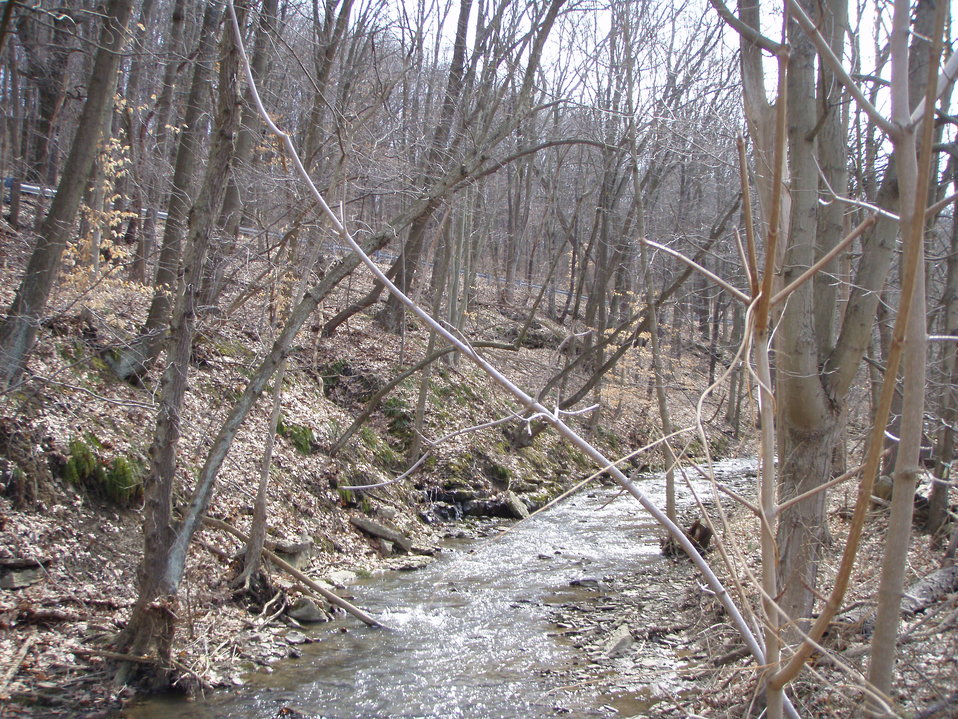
View of a creek running through the Hickory Heights PA community.